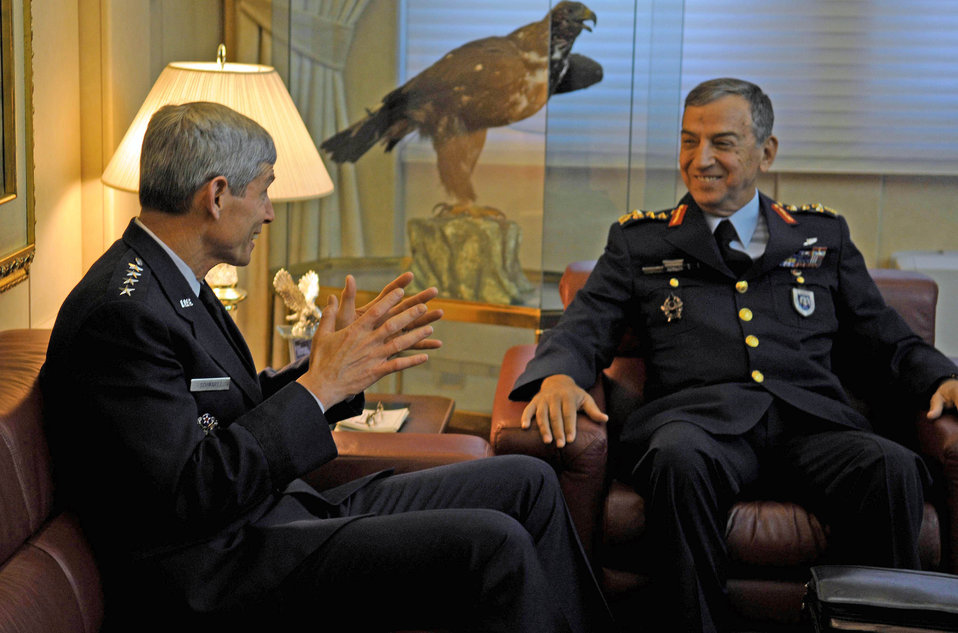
CSAF visits Turkey

Air Force Chief of Staff Gen. Norton Schwartz and Gen. Hasan Aksay, commander of the Turkish air force, chat during General Schwartz's visit to the Turkish air force headquarters July 19, 2010, in Ankara, Turkey.